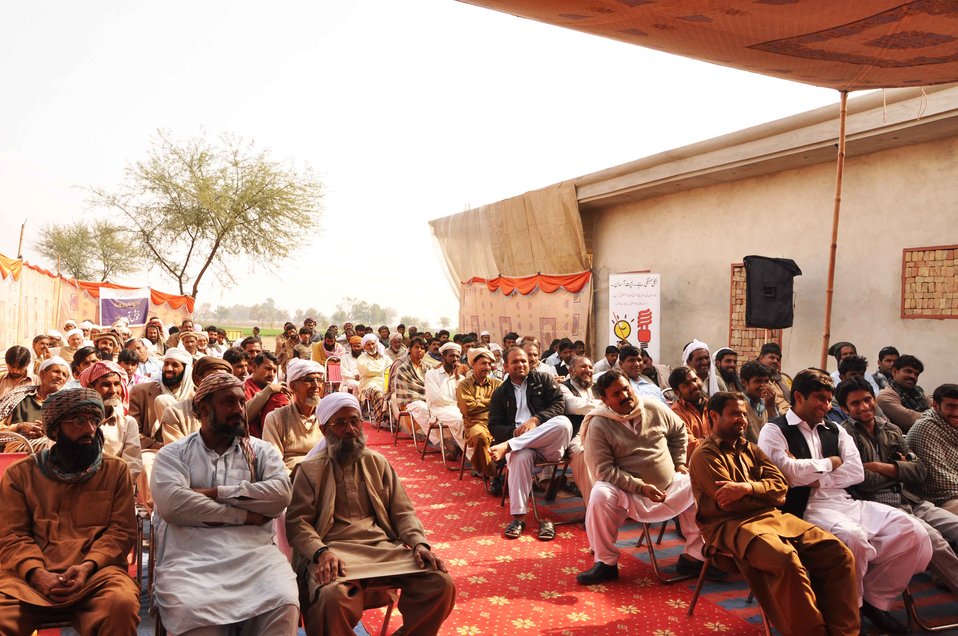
USAID Empowering Farmer of MEPCO Service Area

To cope with the electricity shortfall and power theft in MEPCO's rural areas, two gathering for farmers were organized at Jampur and Mailsi by USAID Power Distribution Program's Communications Team in the second last week of January. More than 600 farmers and local female residents attended the session where MEPCO Consumer Outreach Officer Asghar Baloch highlighted the causes of the power shortage and suggested possible remedies. XEN Naeem Samtia, Local Support Organization Mola Buksh, Deputy Director Technical Shahid Nazeer, Deputy Director Procurement Khawaja Aurangzaib and Public Relations Officer Jamshaid Niazi,shared various energy conservation tips that can be adopted in everyday life. Participants were also informed on the use of efficient tubewell motors,and how they can save electricity and lower bills. The events received coverage in Daily Pakistan, Ausaaf, Crime, Nawa-e-Waqt and various other local newspapers.